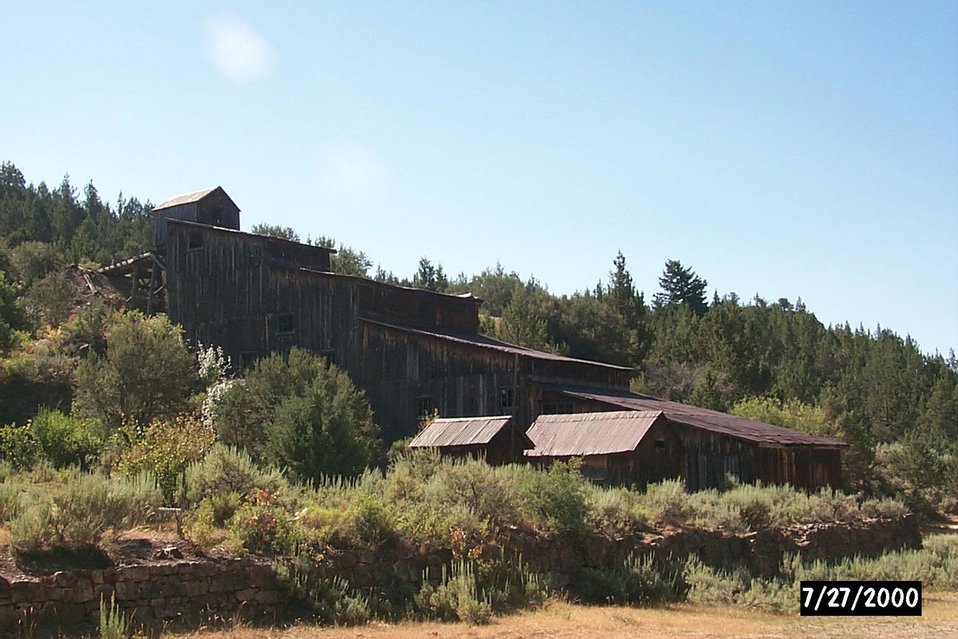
Flint Mill, Historic Value Owyhee's Owyhee Field Office LSRD